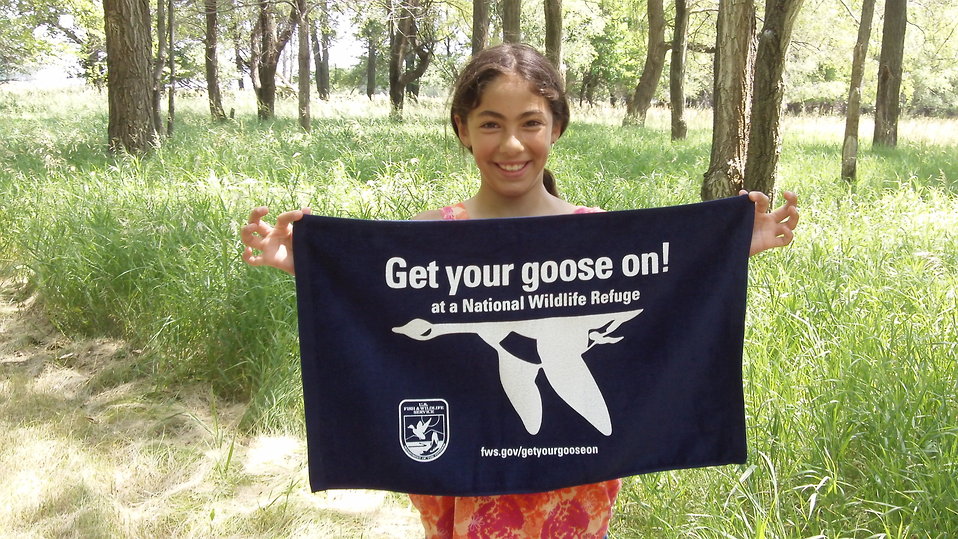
Get Your Goose On!

Photo taken at Huron Wetland Management District in east-central South Dakota.